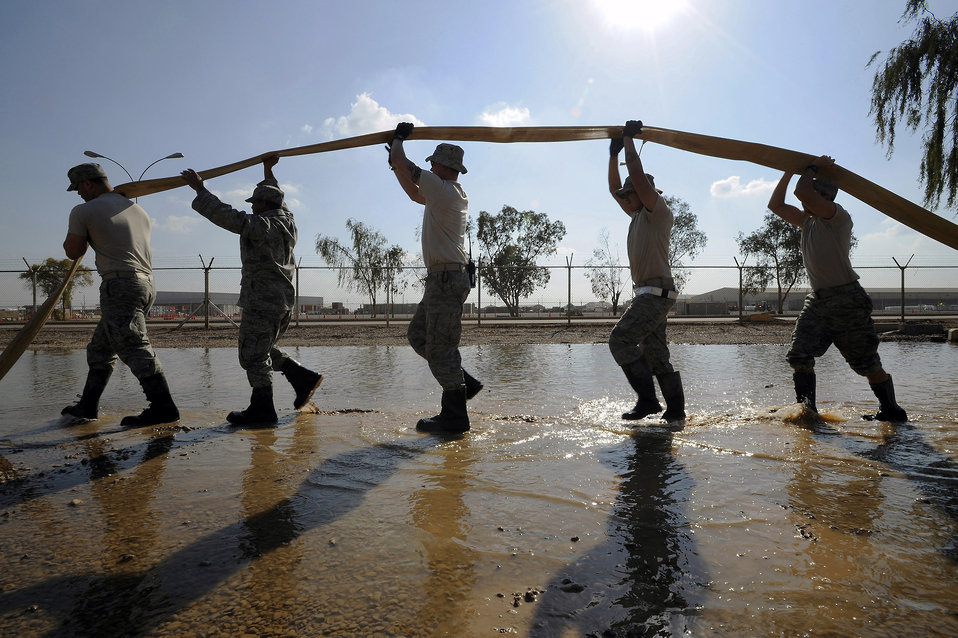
Did someone call a plumber?

Senior Airman Paul Clayborn, Staff Sgt. Mervie Dotson, Tech. Sgt. Eric Miner, Senior Airman Christian Crespo and Airman 1st Class Gregory Hayes drain a hose while pumping floodwater out of a low-lying area Nov. 3 at Joint Base Balad, Iraq. All five Airmen are utility system technicians with the 332nd Expeditionary Civil Engineer Squadron. Airman Clayborn, a native of Arlington, Texas, is deployed from Andrews Air Force Base, Md. Sergeant Dotson, a native of Tyler, Texas, is deployed from Barksdale AFB, La. Sergeant Miner, a native of Concord, N.H., is deployed from McConnell AFB, Kan. Airman Crespo, a Dallas native, is deployed from Malmstrom AFB, Mont. Airman Hayes, a native of Lancaster, S.C., is deployed from Schriever AFB, Colo.